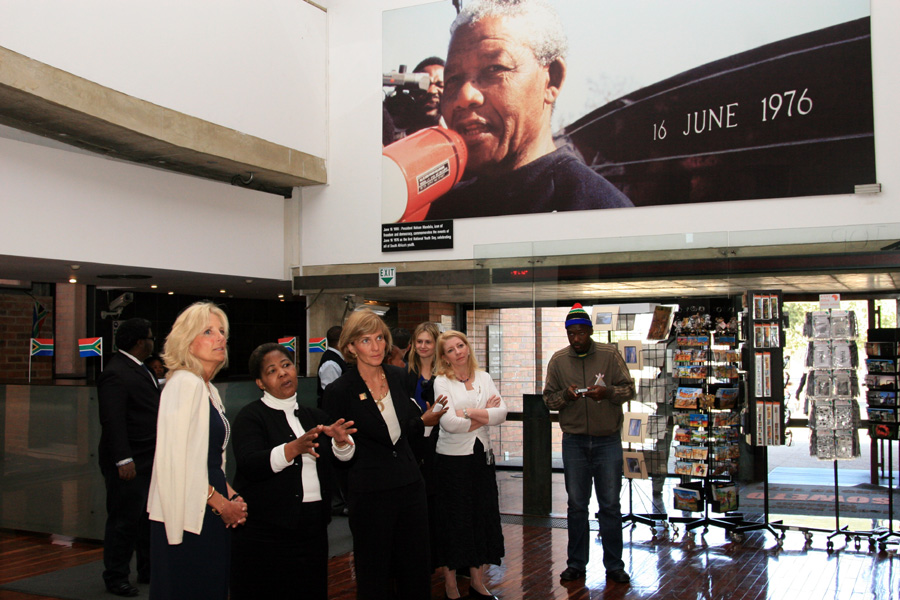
Dr. Jill Biden and Liz Berry Gips Visit Hector Pieterson Museum

Dr. Jill Biden, wife of Vice President Joseph Biden, and Liz Berry Gips, wife of U.S. Ambassador to South Africa Donald H. Gips, visit the Hector Pieterson Museum in Soweto, South Africa, on June 12, 2010.